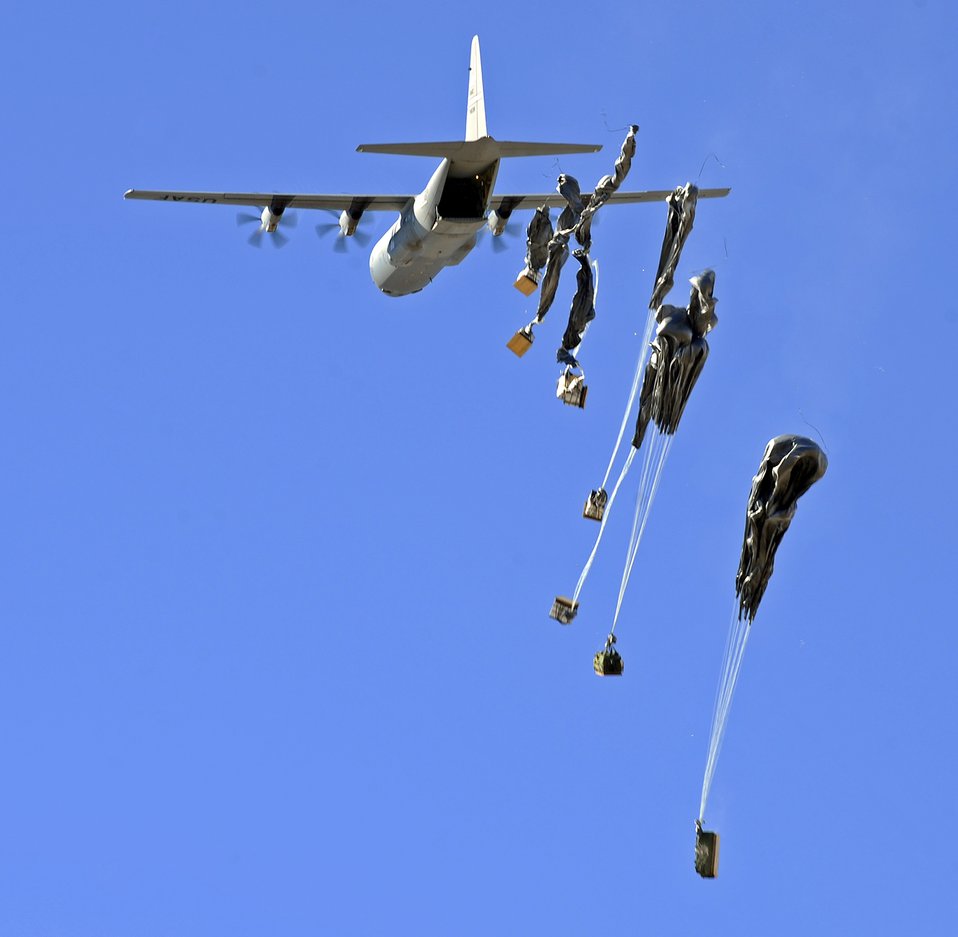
Just dropping in

Supplies are dropped from a C-130 Hercules to International Security Assistance Forces Feb. 7, 2011, at Forward Operating Base Sweeney, Afghanistan.